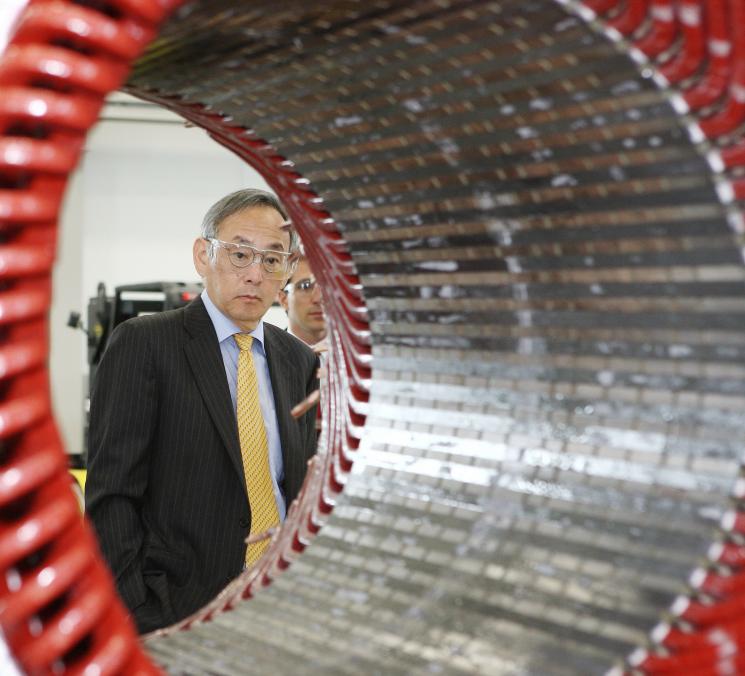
Photo of the Week: July 13, 2012

Department of Energy Secretary Steven Chu visited Ingeteam, based in Milwaukee, Wisconsin, on Thursday, July 12. During the visit, he toured the facilities that produce wind power generators and converters, in addition to PV solar inverters. In this photo he looks at a Stator 2MW Wind Turbine Generator.